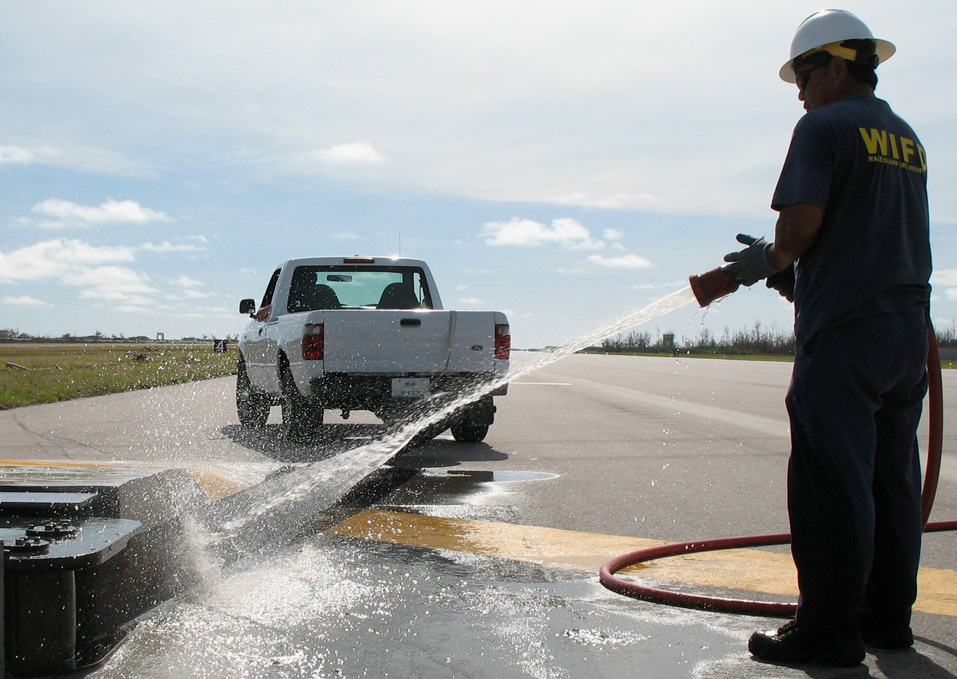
Power pros 'wire' Wake Island

Thomas Hunter pulls a nylon strap from an aircraft arrest system while a firefighter rinses it off at Wake Island Sept. 20.